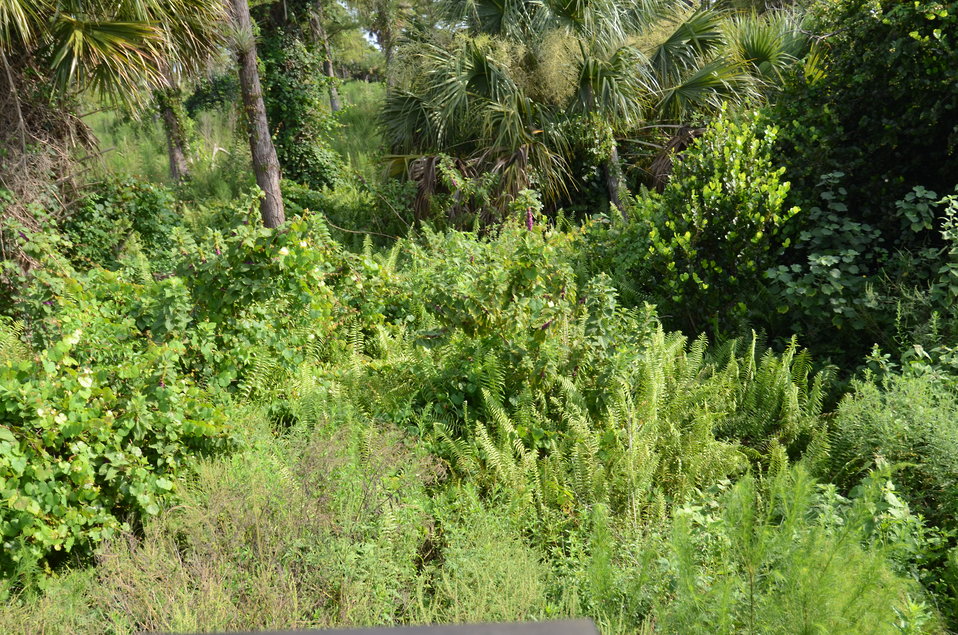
Agriculture Secretary Tom Vilsack today announced $100 million in financial assistance to acquire permanent easements from eligible landowners in four counties and assist with wetland restoration on nearly 24,000 acres of agricultural land in the Northern Everglades Watershed, FL, on Thursday, August 8, 2011.